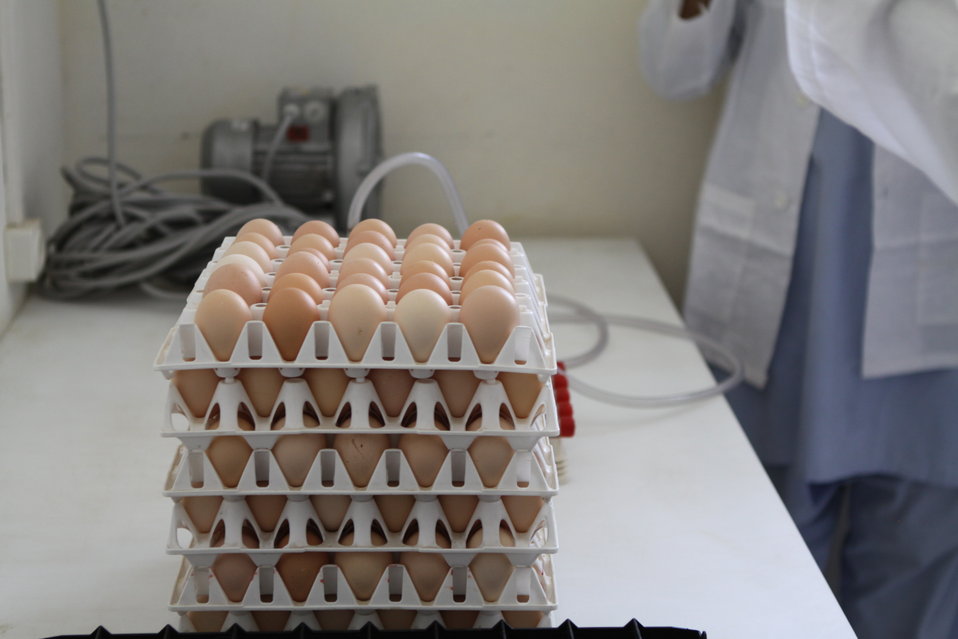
Bolan Poultry Farm